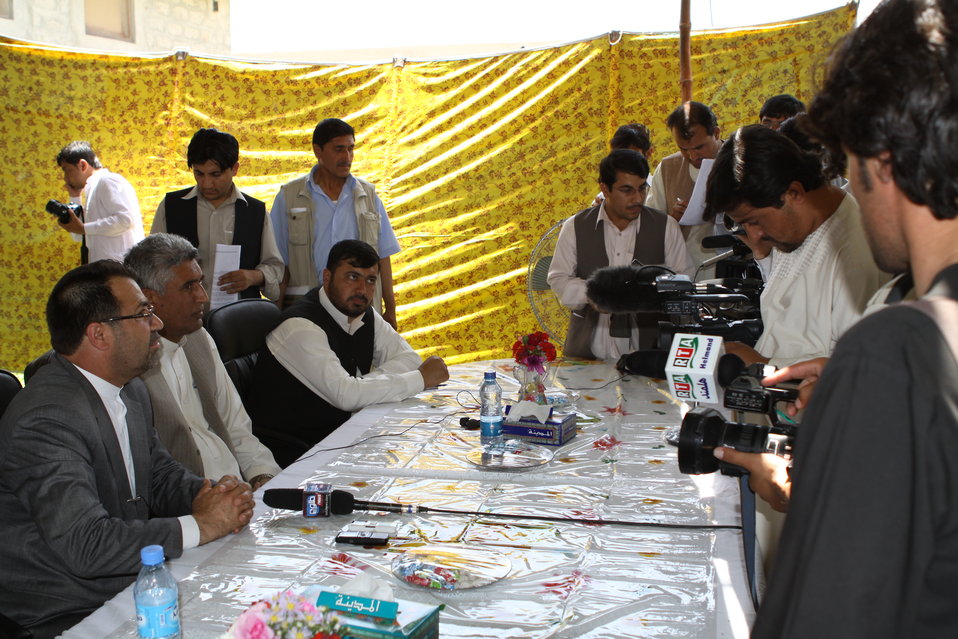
Bolan Poultry Farm